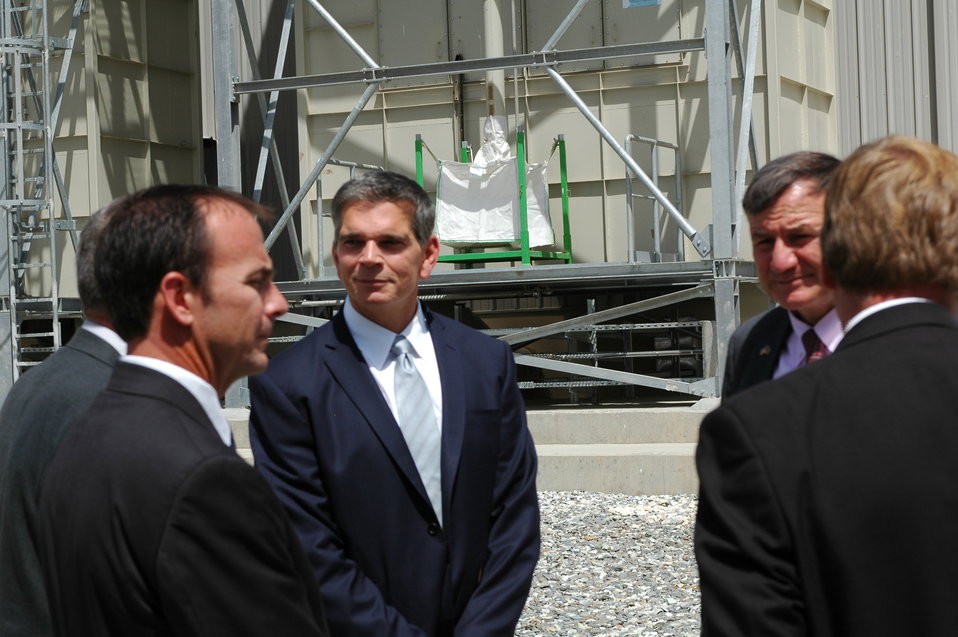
105 MW Tarakhil Power Plant Handover